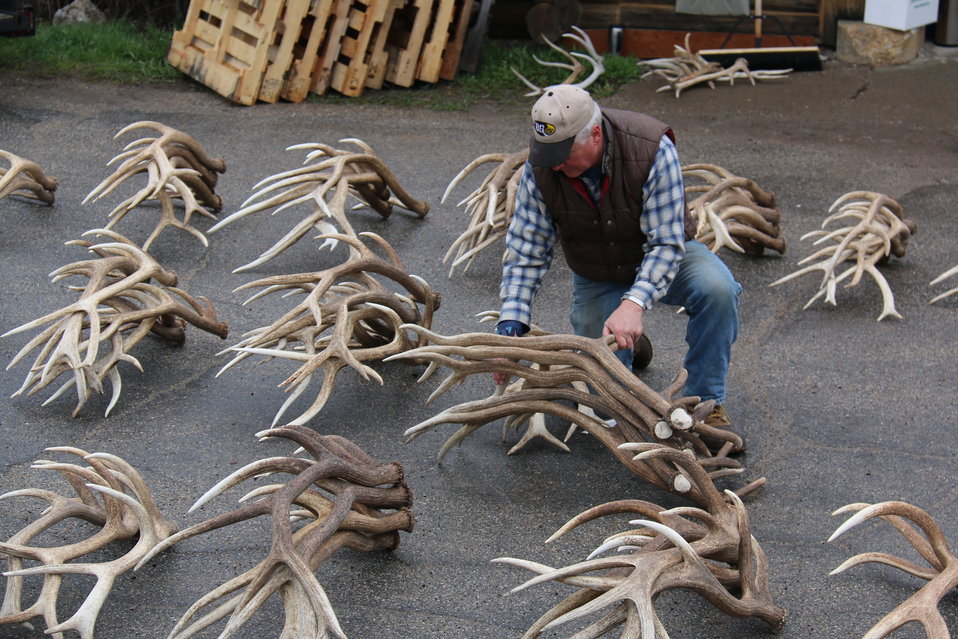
Similar Pile

Similarity in the shape and color of the antlers in this pile can be seen as a Scout leader stacks them up.